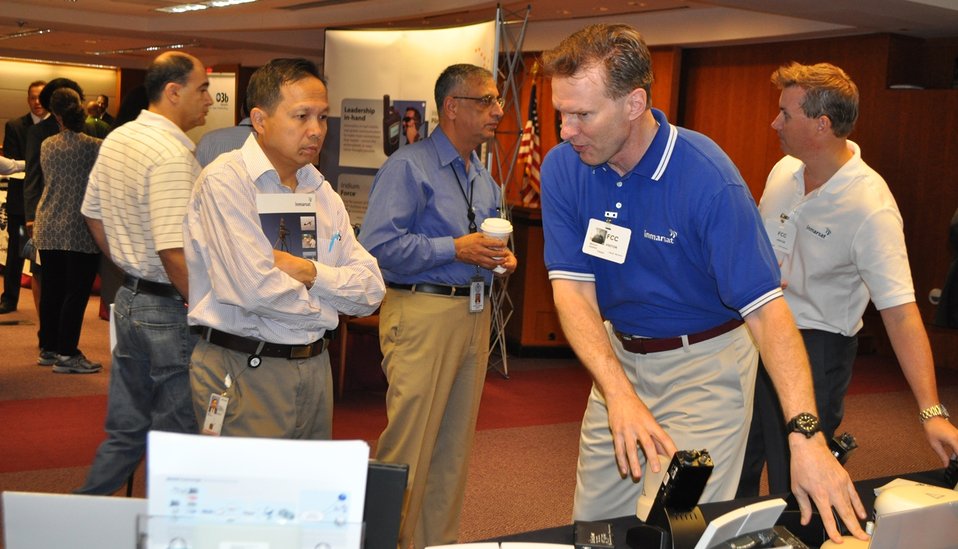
5.14.2014 Satellite Technology Demonstration

Satellite Technology Demonstration at FCC